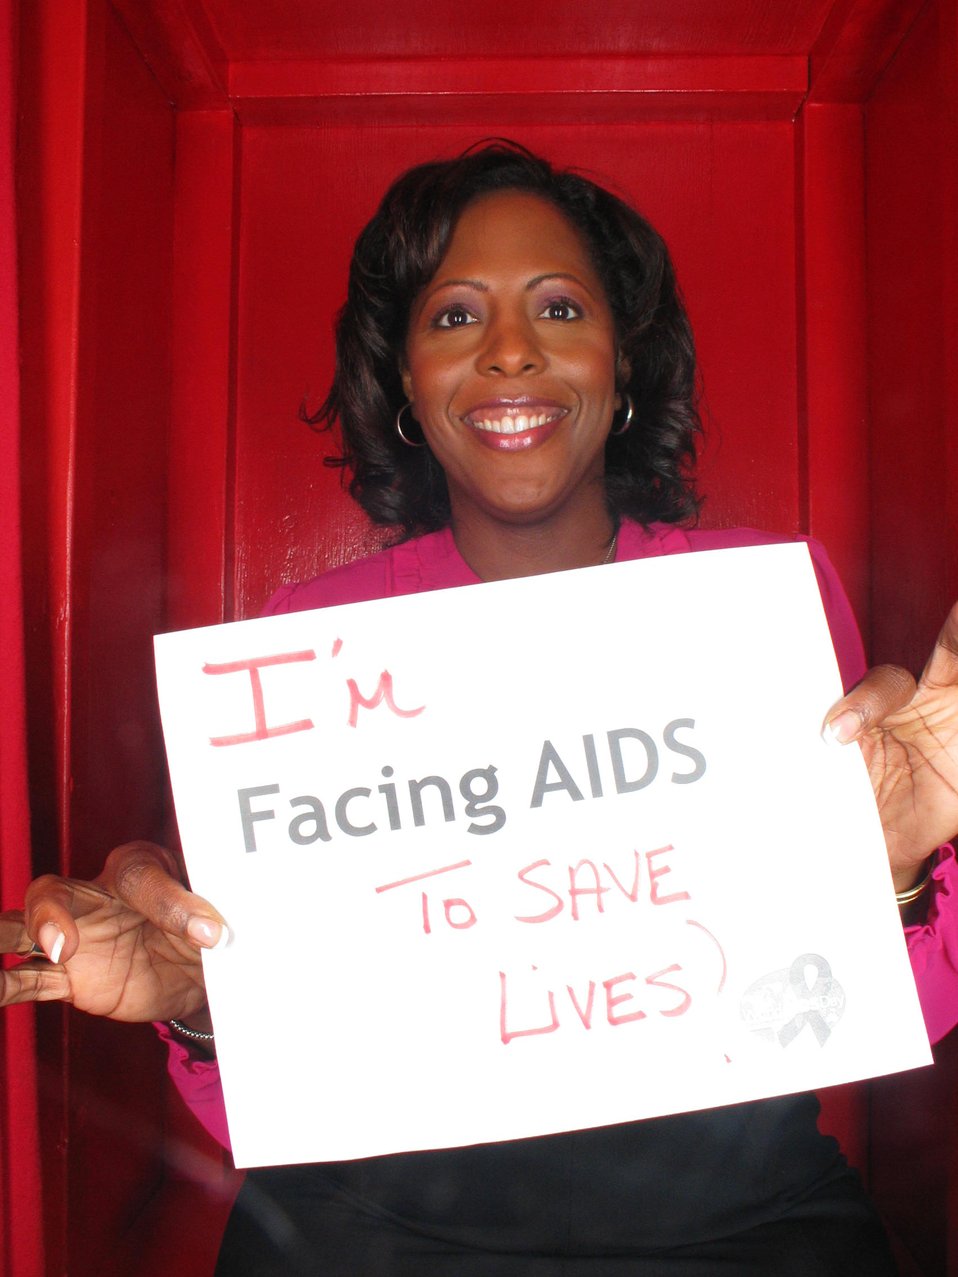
I'm Facing AIDS to save lives.